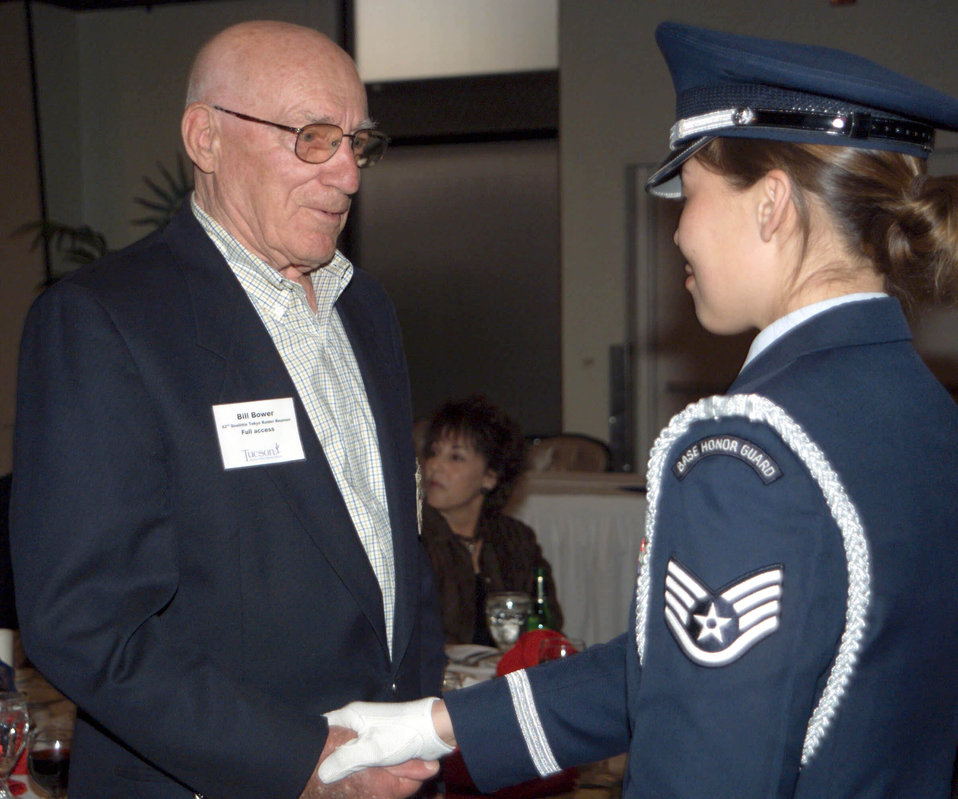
Doolittle Raiders reunite

DAVIS-MONTHAN AIR FORCE BASE, Ariz. -- Staff Sgt. Michelle Butler meets Bill Bower, a Doolittle Raider, during a dinner here April 15 honoring the group's 62nd reunion. Doolittle Raiders were part of the pivotal mission April 18, 1942, to bomb Tokyo as symbolic revenge against Japan's attack on Pearl Harbor, Hawaii. The mission was led by then-Lt. Col. James Doolittle. Seventeen of the 80 raiders are alive today. Sergeant Butler is a member of the base's elite honor guard.